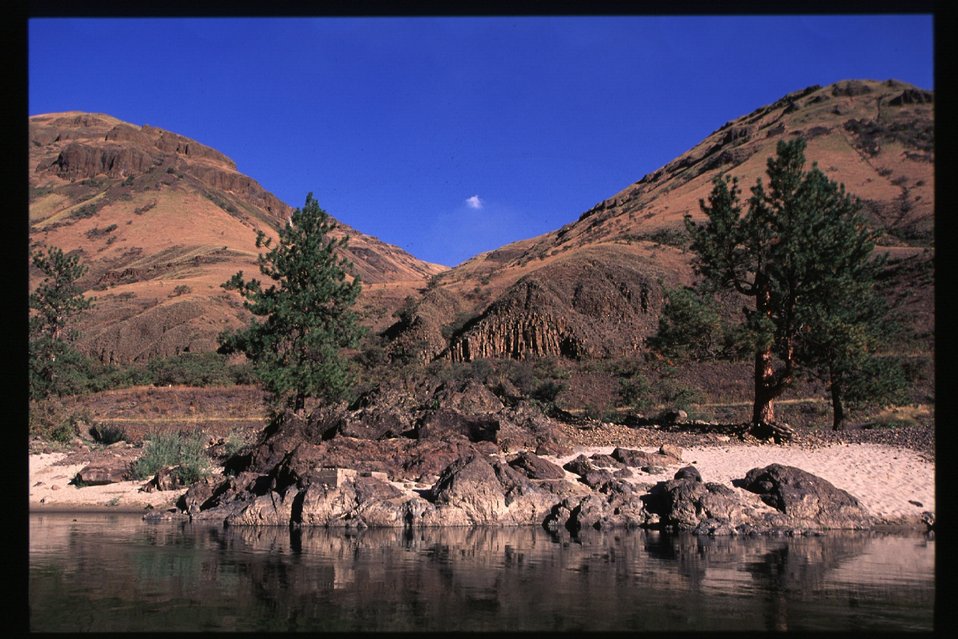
Scenic beach Lower Salmon River Cottonwood Field Office UCSC Upper Columbia Salmon Clearwater District